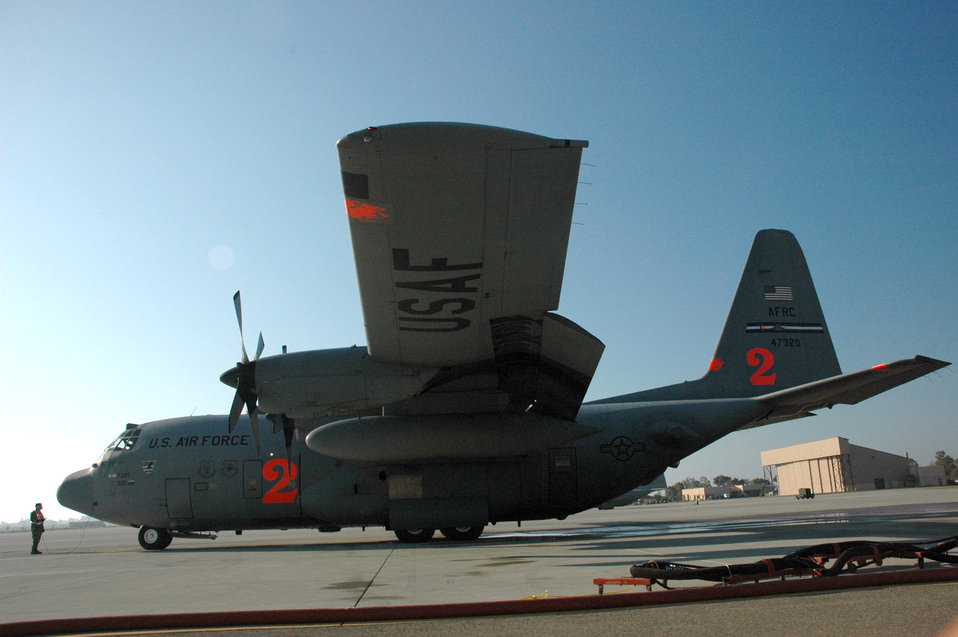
Reserve C-130s called in to fight California wildfires

Two Modular Airborne Firefighting System configured C-130 Hercules from the Air Force Reserve Command's 302nd Airlift Wing at Peterson Air Force Base, Colo., are being dispatched to California to help fight wildfires there. In 2007 the 302nd AW flew 76 sorties against fires in Southern California discharging more than 200,000 gallons of retardant protecting more than 2,000 homes, saving thousands of lives and preventing an estimated $1.1 billion in property loss.